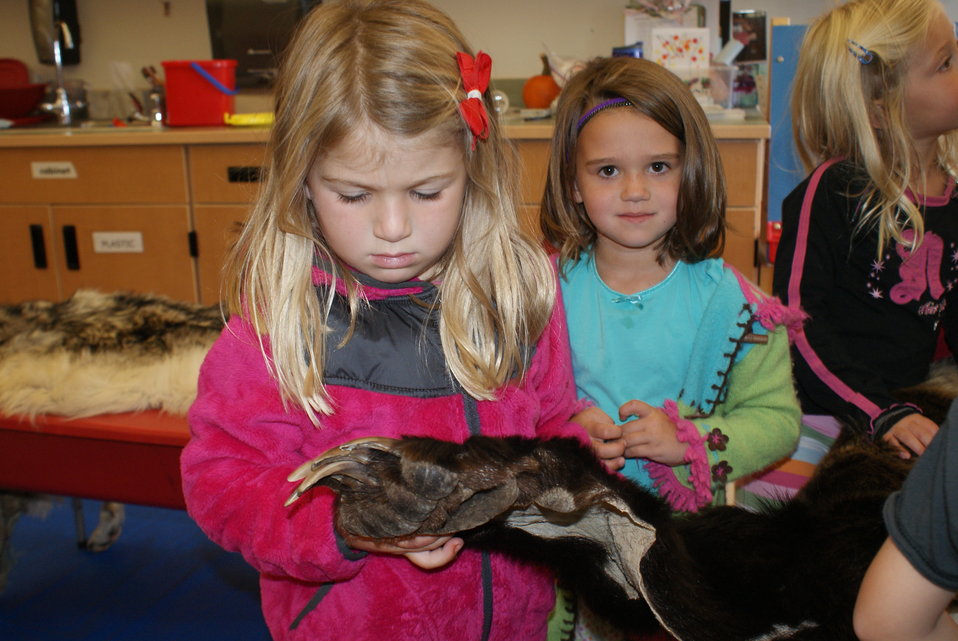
Scientists in the Community Program

U.S. Fish and Wildlife Service Mountain-Prairie Region Deputy ARD for External Affairs, Matt Kales, introduces early childhood education students at William Roberts Elementary School in Denver to some of Colorado's native and historic wildlife species.